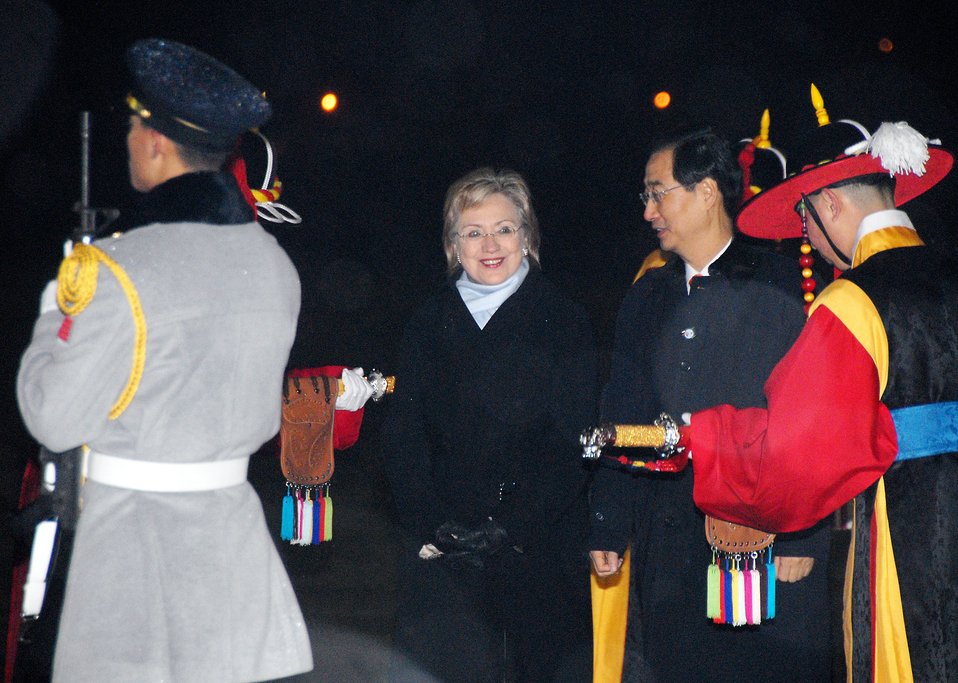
Secretary Clinton Arrives in Seoul, South Korea

U.S. Secretary of State Hillary Rodham Clinton, accompanied by Ambassador-designate to the United States Han Duck-soo, is welcomed by color guard at Seoul Air Base near Seoul, South Korea February 19, 2009.